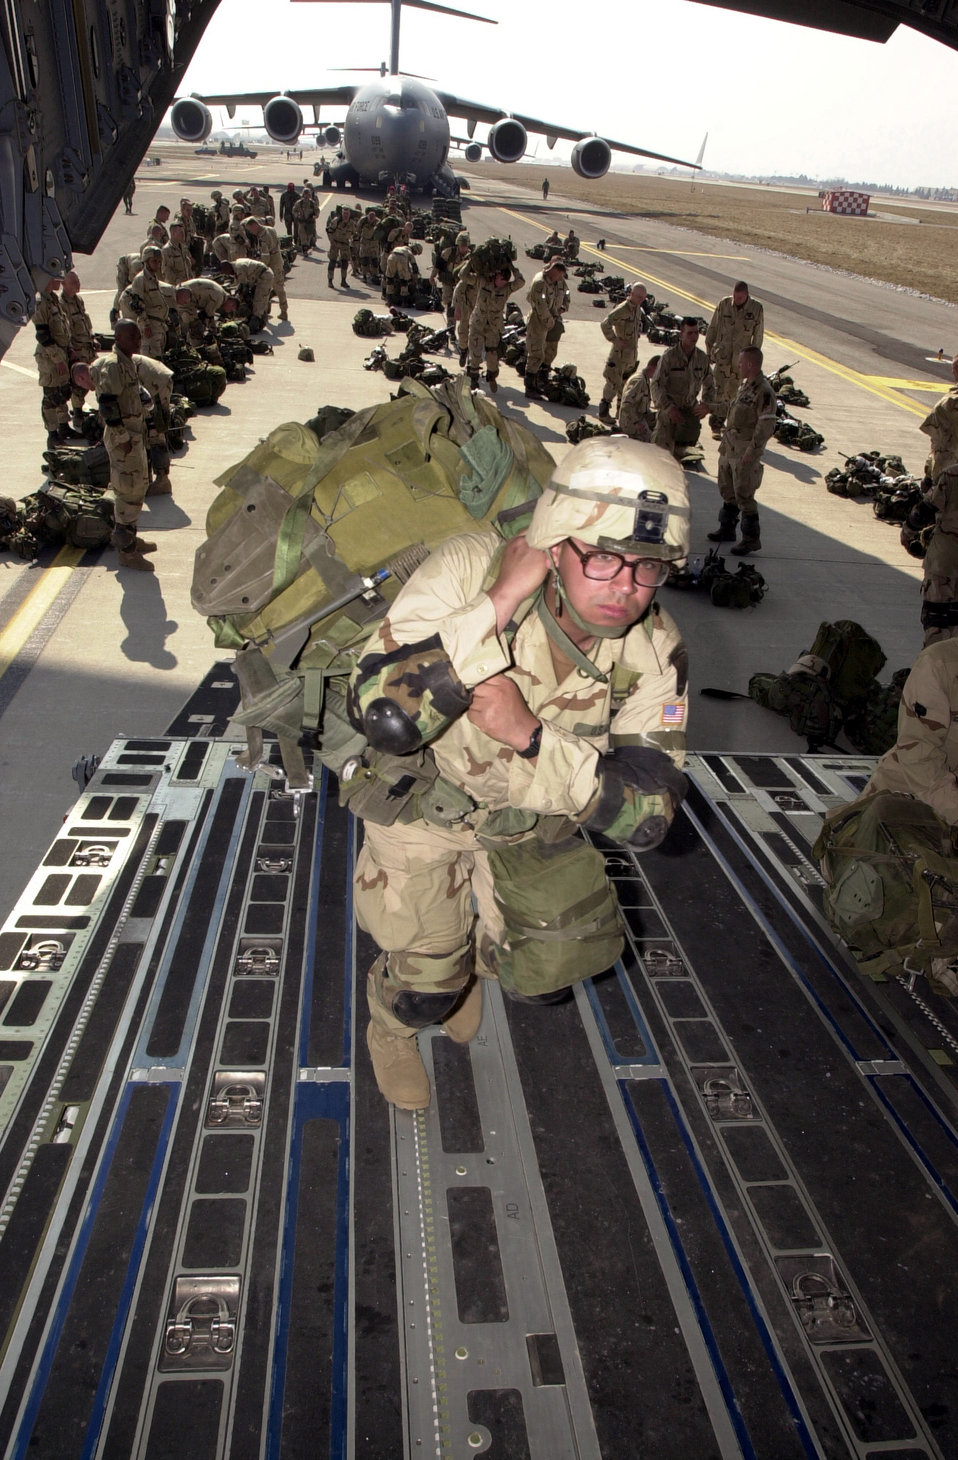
All aboard

OPERATION IRAQI FREEDOM -- A soldier boards a C-17 Globemaster III. Nearly 1,000